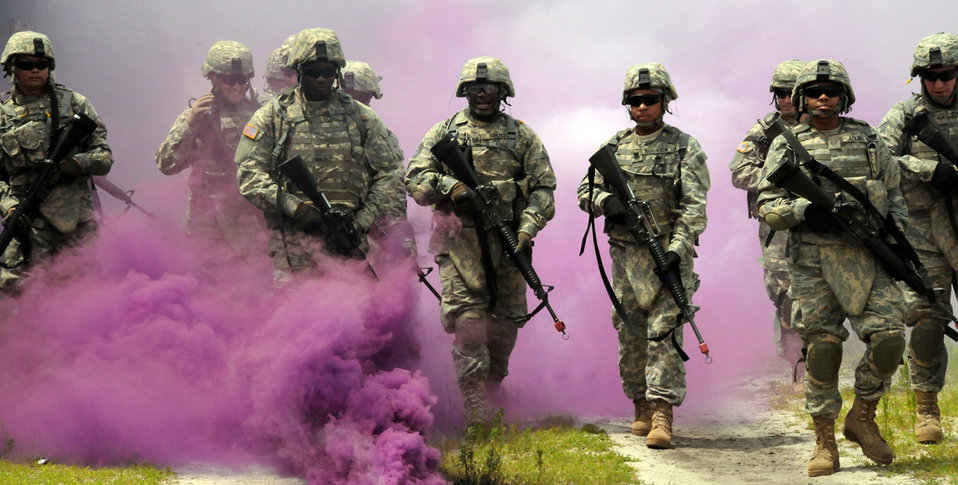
Purple rain

Airmen and Sailors undergoing individual augmentee training walk through a cloud of smoke during an exercise on the training range at Fort Dix, N.J. The servicemembers are undergoing training before deploying to support operations Enduring Freedom and Iraqi Freedom.